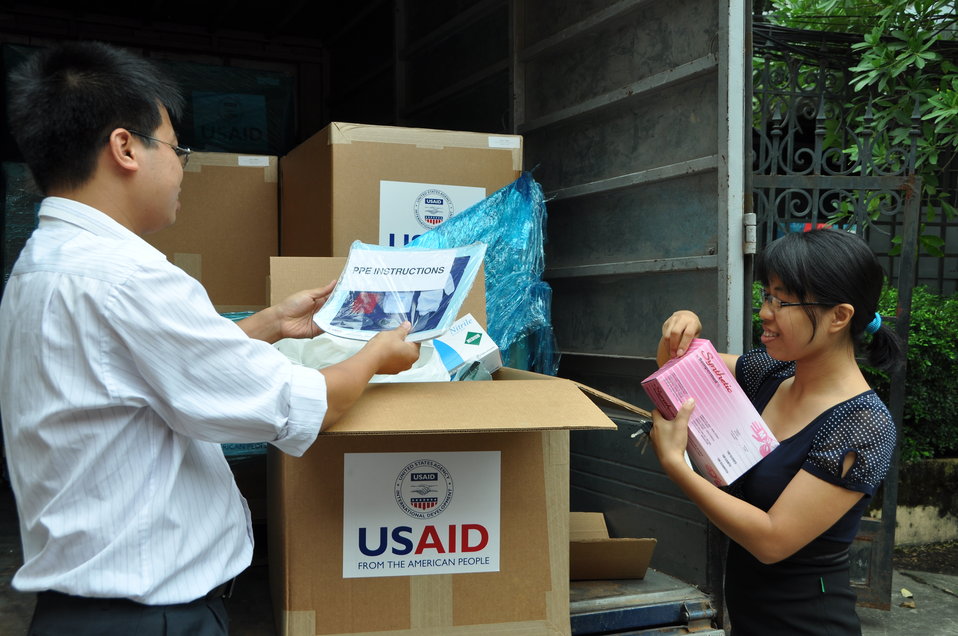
Vietnamese officials inspect new personal protective equipment in Hanoi in September 2011.

Nguyen Dug Hanh of Vietnam's Department of Animal Health (on truck), transport supervisor Doan Phu Huyen (left) and Nguyen Thi Thanh Diep inspect a shipment of 1,700 personal protection kits -- suits, masks, gloves, goggles and related items -- in September 2011 before they are shipped to Can Tho, Ha Nam, Hung Yen, Kieng Giang, and Quang Tri provinces to help veterinary officials and animal health workers battle disease outbreaks in the country. Since 2007, USAID has provided over 15,000 protective equipment kits for animal health workers in Vietnam.